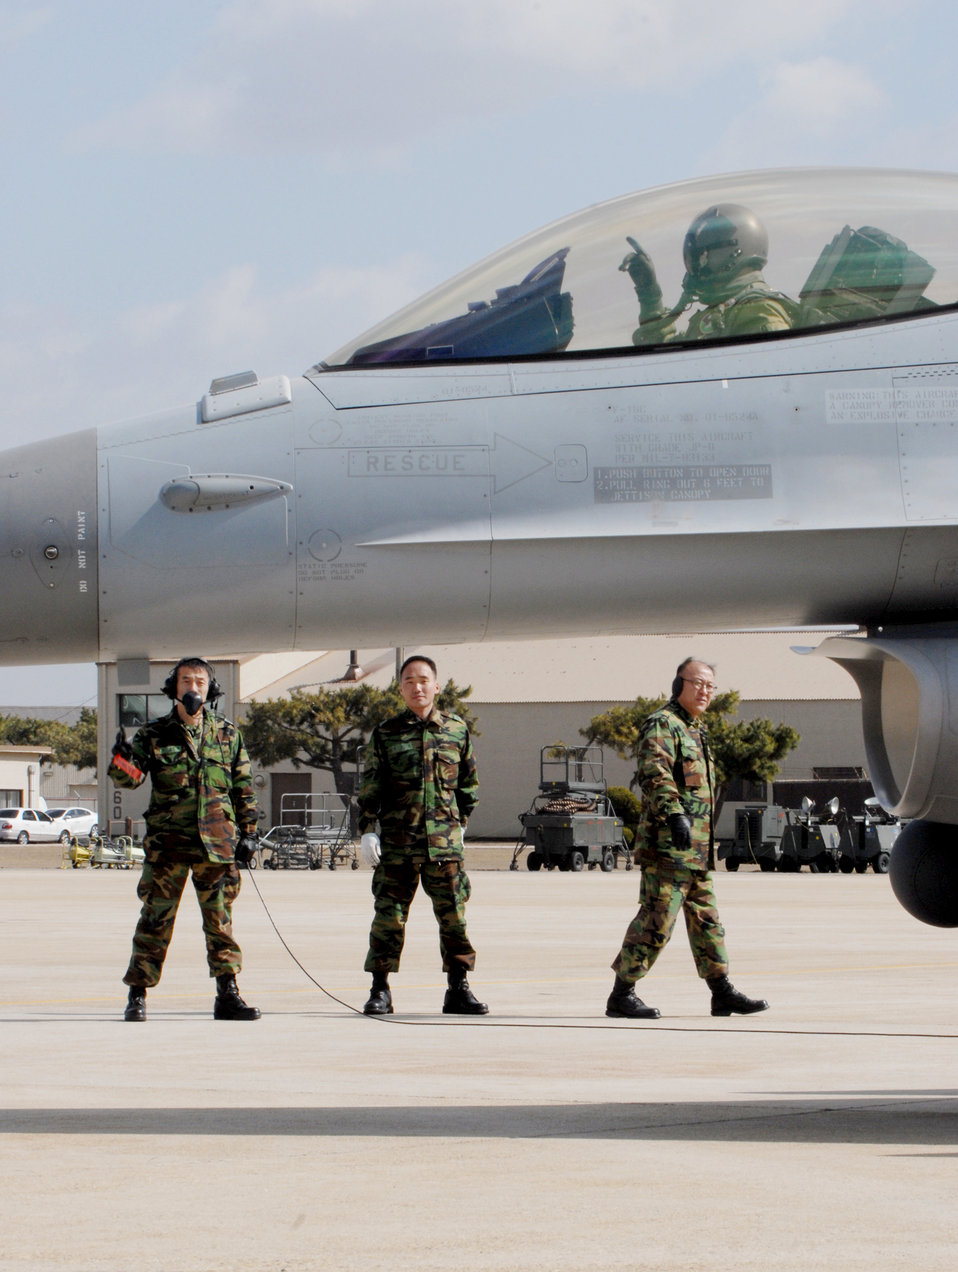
Kunsan Airmen train with South Korean fighter pilots

South Korea air force crew chiefs perform one last preflight check during an exercise March 16, 2010, at Kunsan Air Base, South Korea. The exercise places U.S. and South Korea air force pilots together for several realistic aerial exercises to familiarize with each other's tactics and procedures.